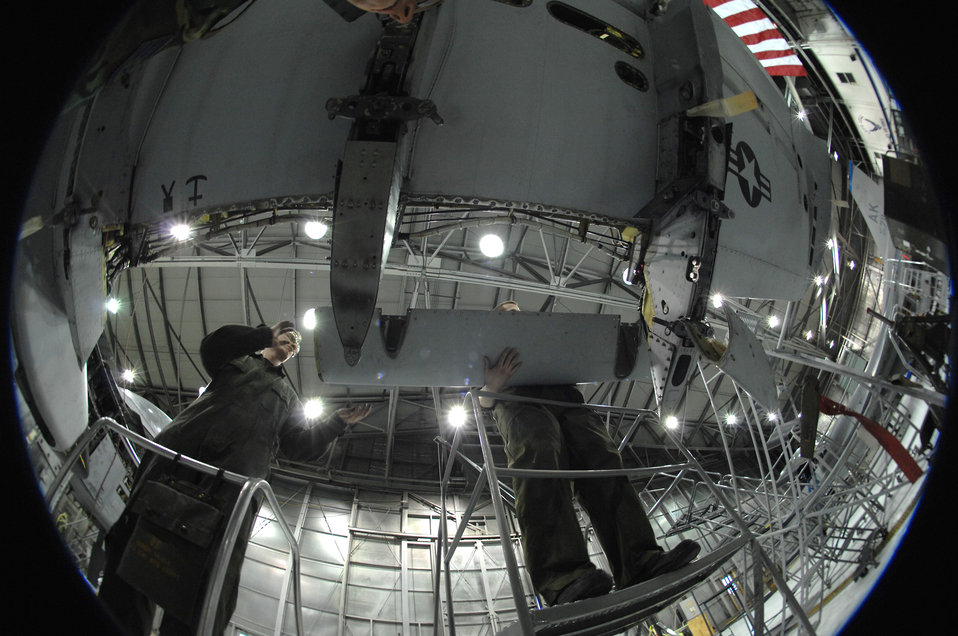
It's just a phase they're going through

Airman 1st Class Mitchell Guy (left) and Senior Airman Timothy Jeter replace a leading edge panel on an A-10 Thunderbolt II March 13 during phase maintenance at Eielson Air Force Base, Alaska. During phase maintenance, Airmen overhaul the entire aircraft to ensure it is ready for safe flight. The Airmen and the other maintainers in the 345th Aircraft Maintenance Squadron can turn an A-10 around in 10 days.